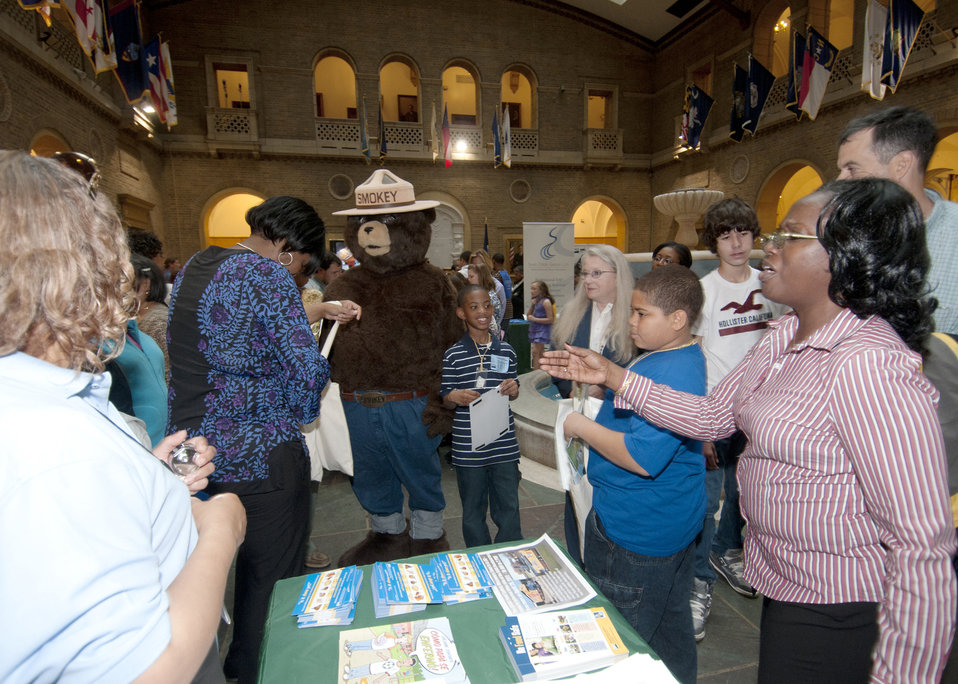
The U. S. Department of Agriculture (USDA) held its annual “Take Your Child to Work Day” on the patio of the Whitten Building, in Washington, DC, on Thursday, April 28, 2011. The program is designed to introduce young people to USDA’s wide range of responsibilities and services. Forest Service’s Smokey Bear strolls among the many young people at Agriculture’s “Take Your Child to Work Day” event.